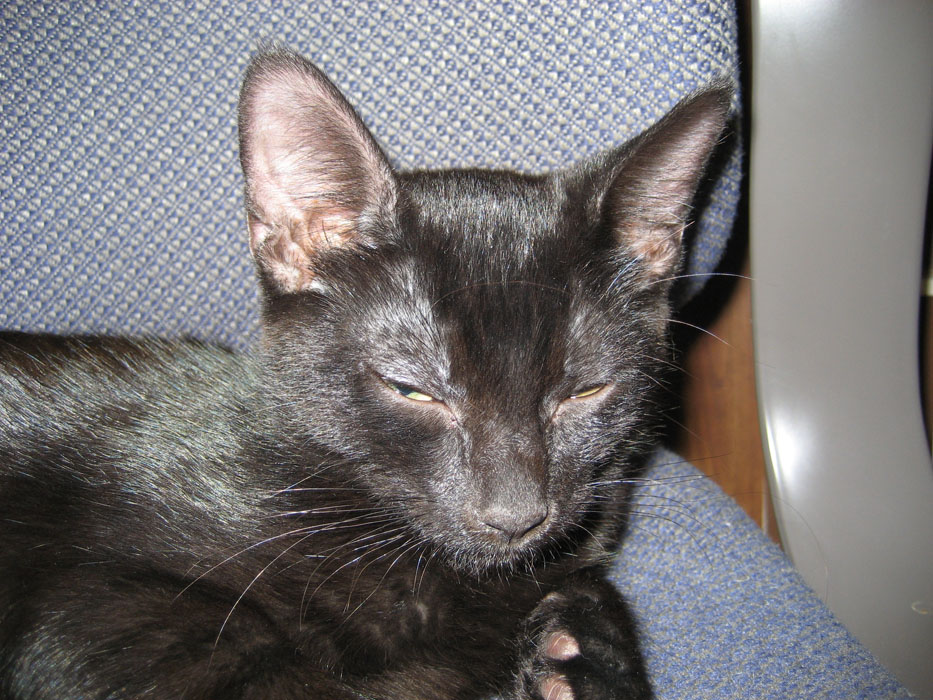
A relaxed cat with partially closed eyes.